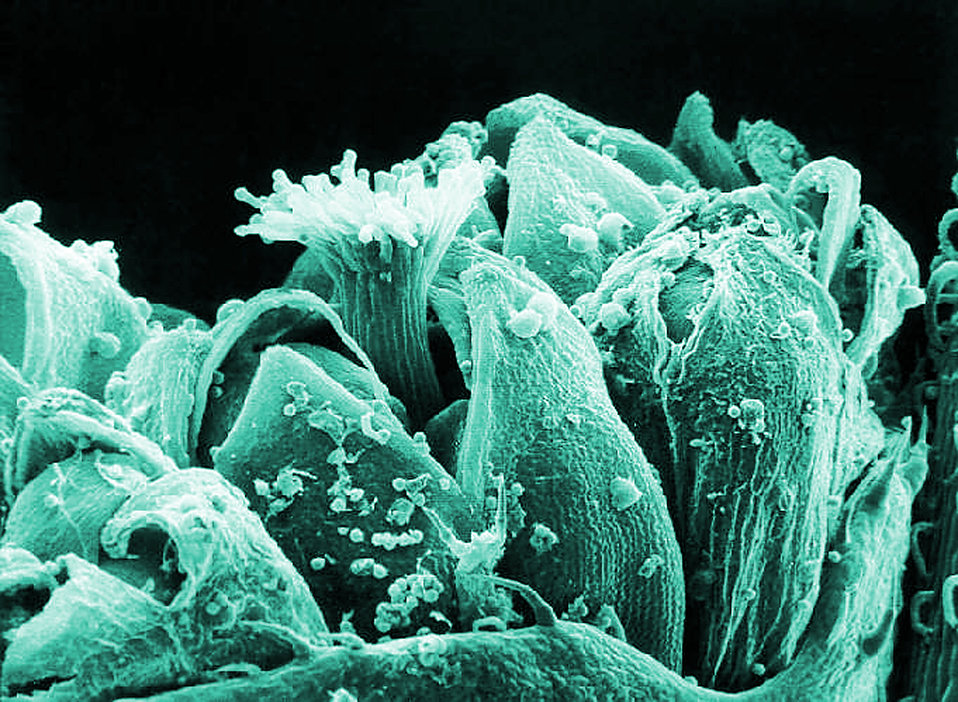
This is a scanning electron micrograph of an Ambrosia trifida plant, or more commonly known as ragweed. See PHIL 11199 for a black and White version of this image.